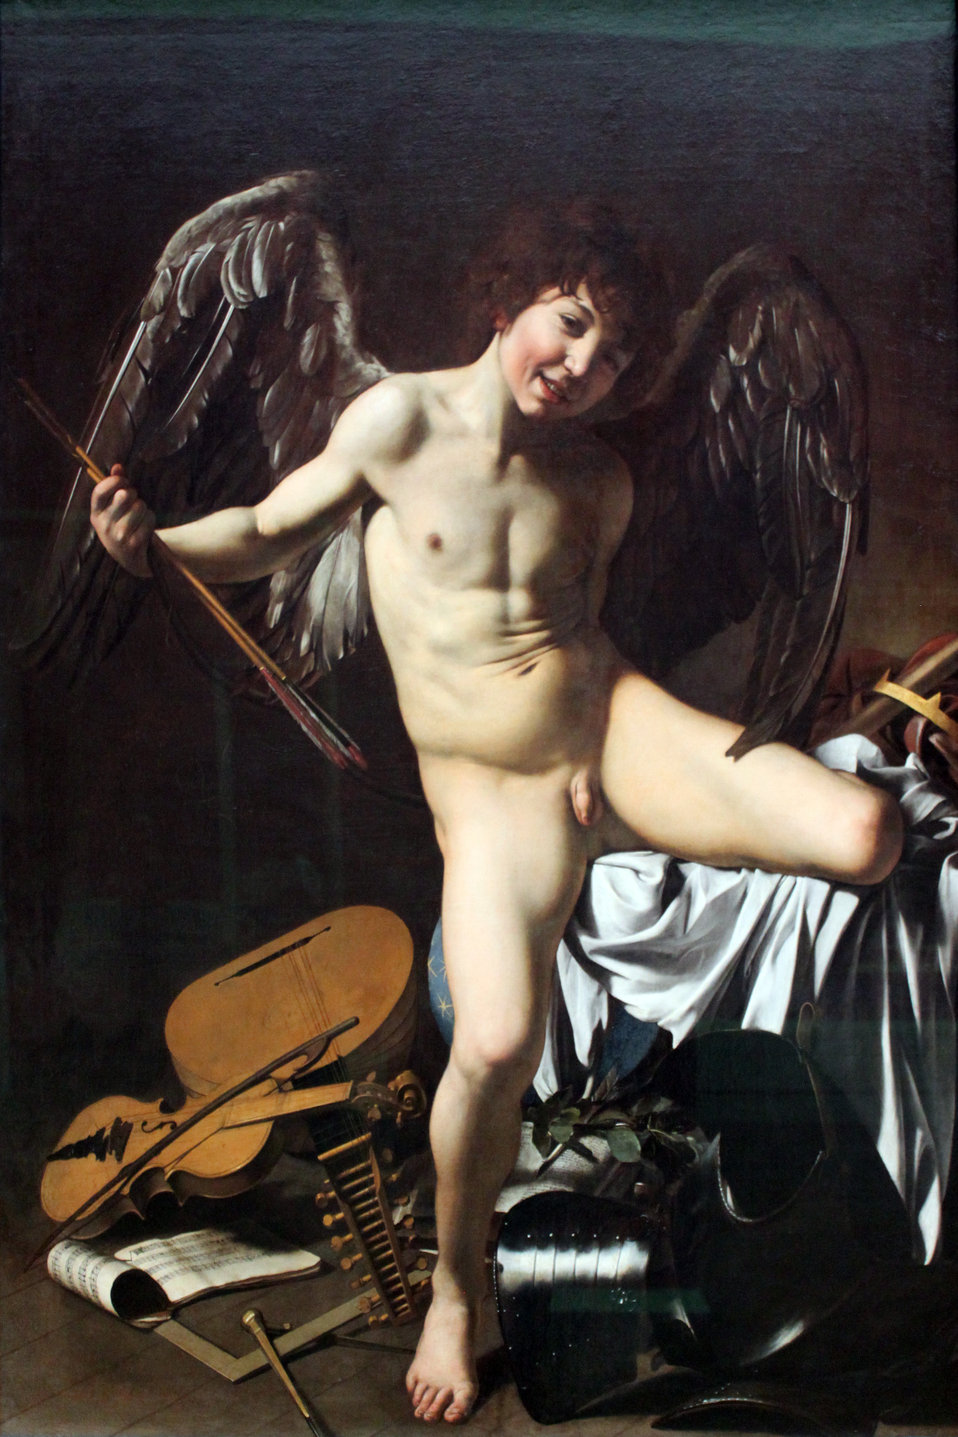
1601 Caravaggio Amor als Sieger anagoria